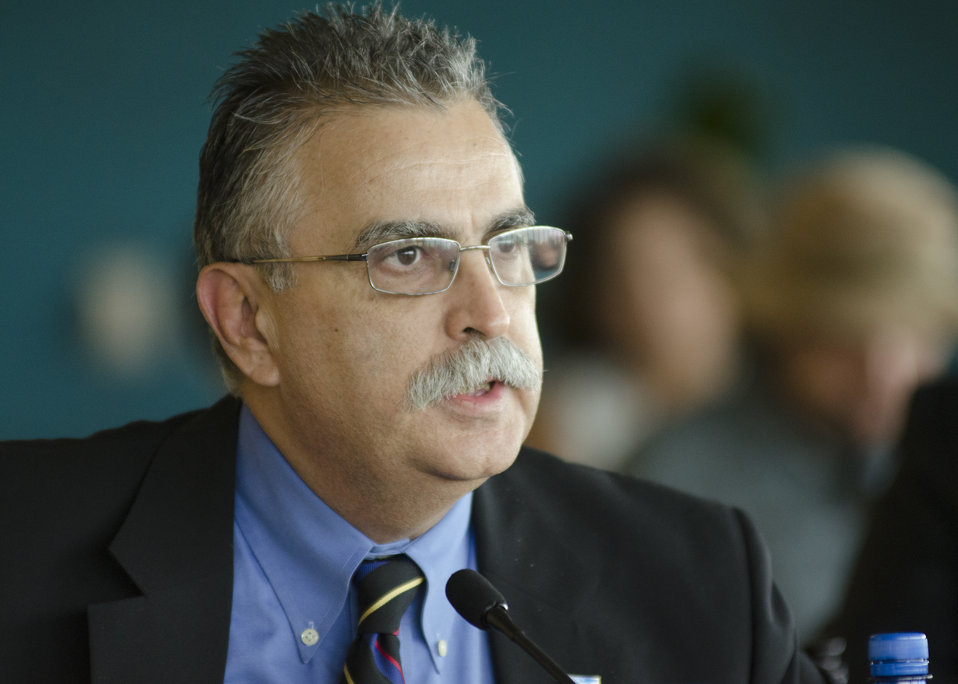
Agriculture Farm Service Agency Administrator Juan Garcia, during the U.S. Department of Agriculture's (USDA) Council for Native American Farming and Ranching (CNAFR) concludes its first meeting at the National Museum of the American Indian in Washington, D.C., on Wednesday, Aug. 15, 2012. CNAFR was created to advise the Secretary on ways to eliminate barriers to participation for Native American Farmers and Ranchers in USDA programs. The Council was established as part of the Keepseagle settlement, and is conducted under the oversight of USDA's Office of Tribal Relations under the Office of the Secretary of Agriculture.